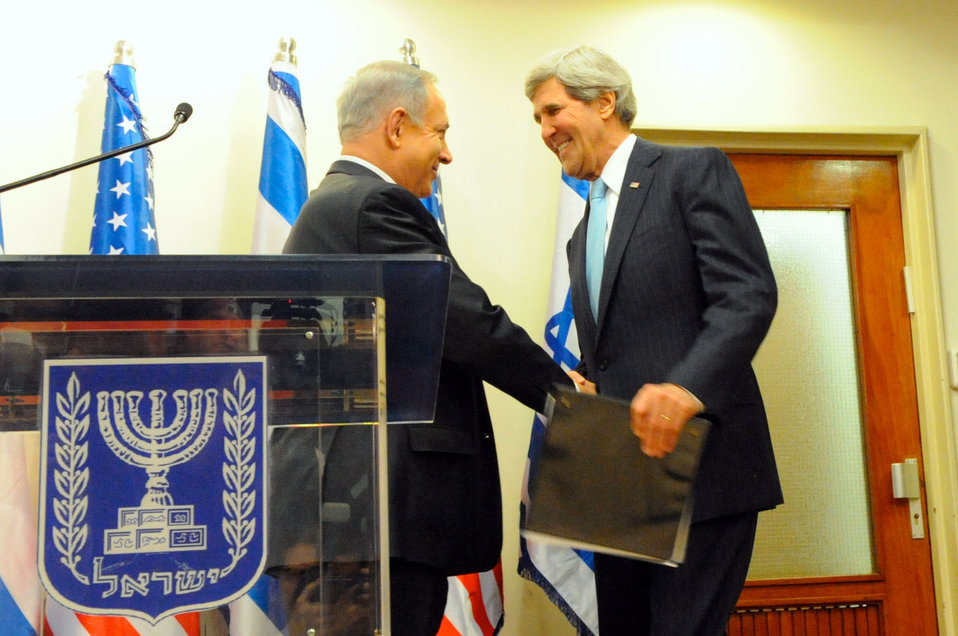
Secretary Kerry is Greeted by Israeli Prime Minister Netanyahu

Israeli Prime Minister Benjamin Netanyahu welcomes U.S. Secretary of State John Kerry as he arrives for a series of meetings at Netanyahu's offices in Jerusalem on January 2, 2014.